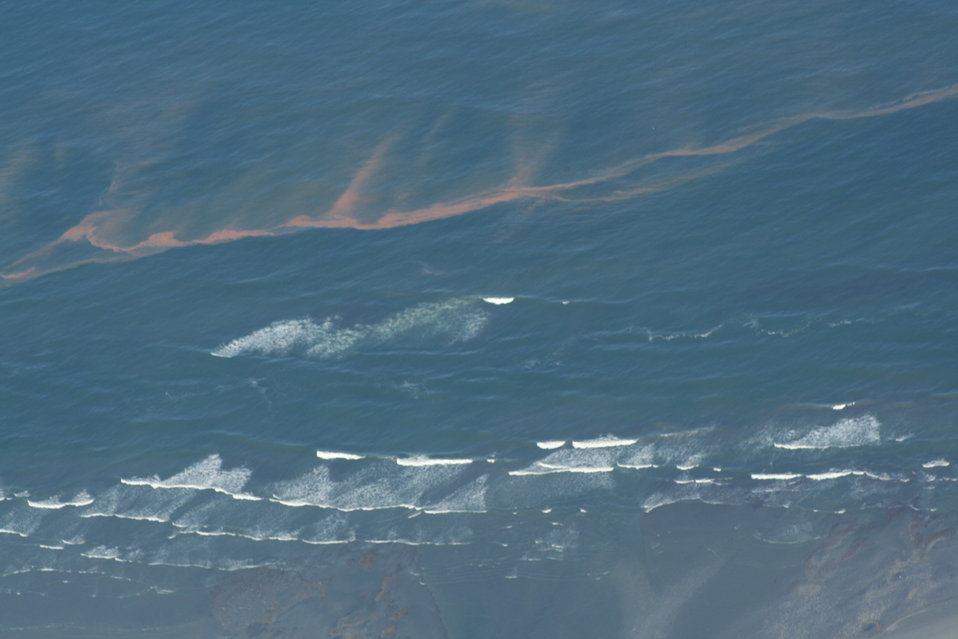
Flight 7 012